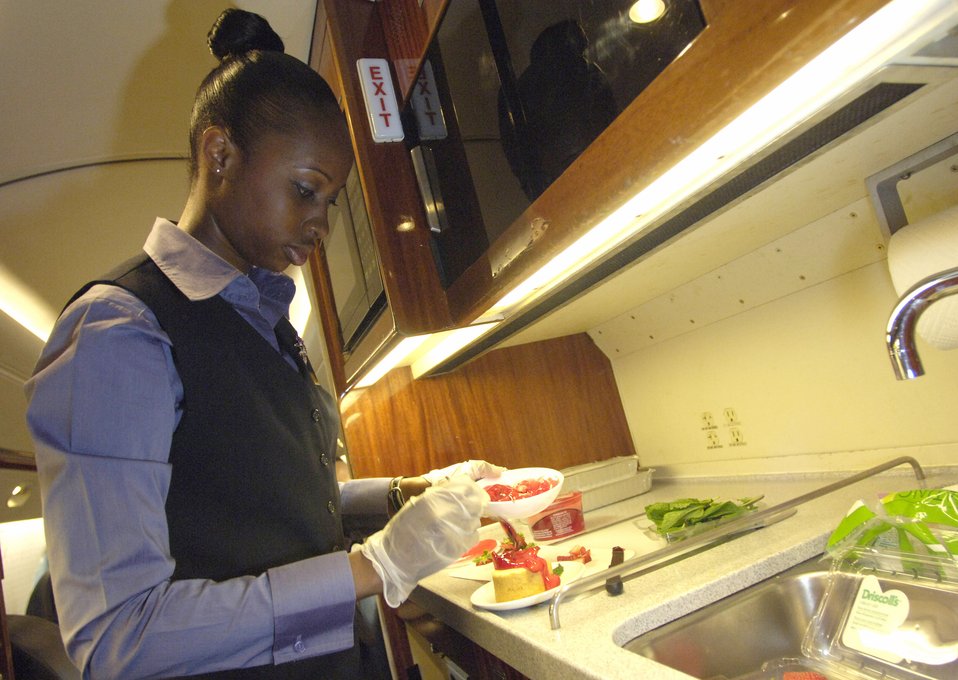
Flight attendants provide world-class service

Staff Sgt. Danyoi Brown prepares a dessert course Oct. 31 in the galley of a C-37A aircraft. Sergeant Brown is a special air mission flight attendant with the 89th Airlift Wing's 99th Airlift Squadron at Andrews Air Force Base, Md. Though they prepare and serve food and beverages, the top priority of Air Force flight attendants are to ensure the safety of passengers and other crew members on board their aircraft.